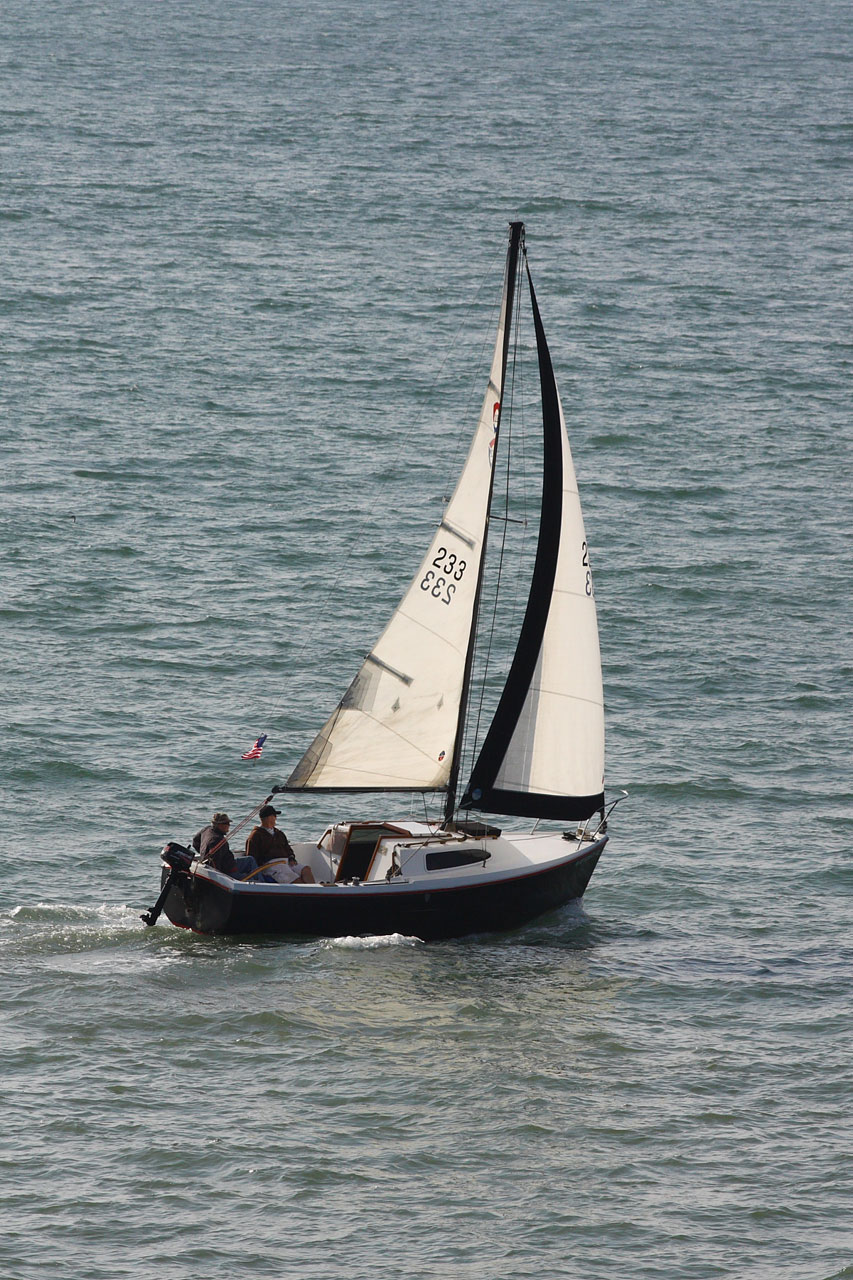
Small sloop sailboat

Small, single-mast sailboat making its way north past huntington beach pier.